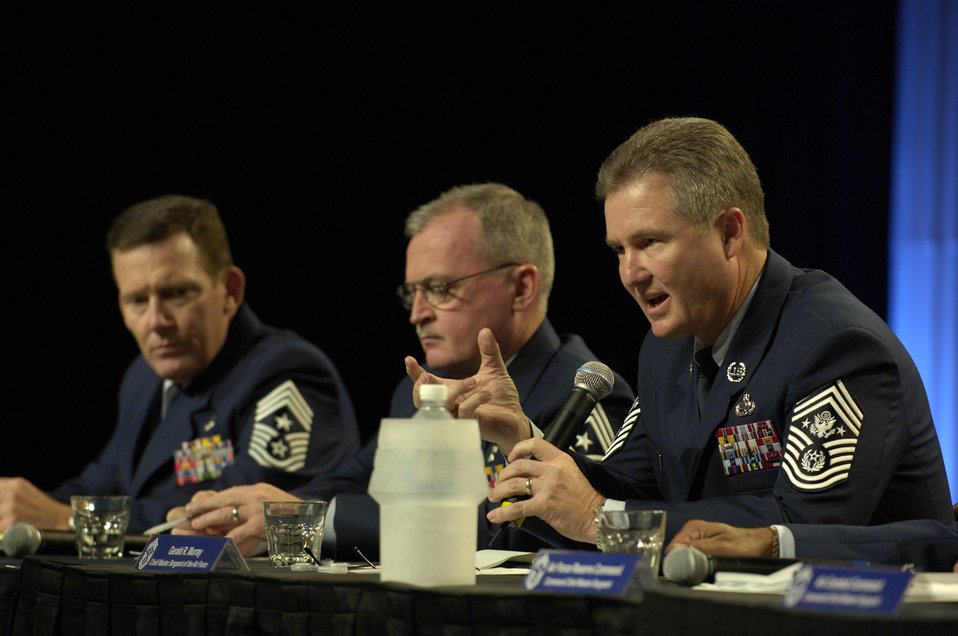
Command chiefs address Airmen's concerns

WASHINGTON -- Chief Master Sgt. of the Air Force Gerald R. Murray moderates a command chiefs' panel during the Air Force Association's 2005 Air and Space Conference and Technology Exposition here Sept. 12. The panel consisted of command chiefs from across Air Force major commands.